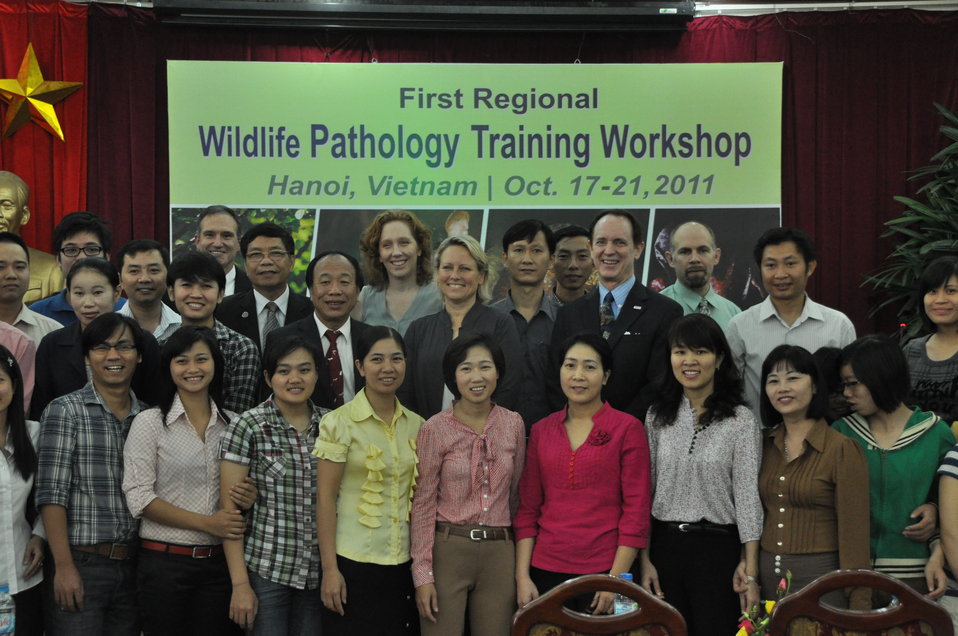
USAID EPT Smithsonian Pathology Training to Detect Emerging Infectious Diseases Wildlife and Other Animals in Vietnam Workshop